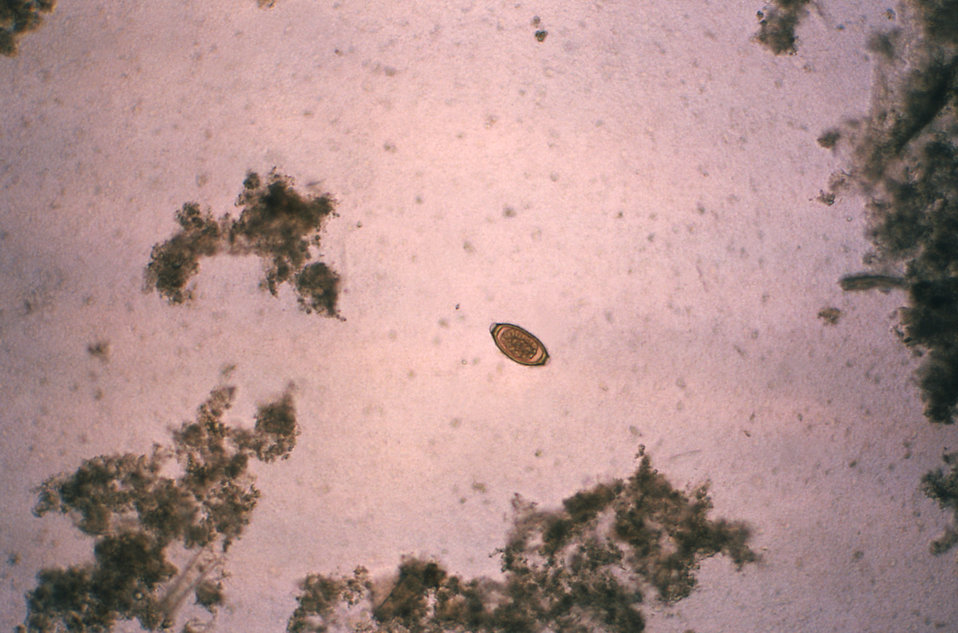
Under a magnification of 128x, this micrograph depicts an egg from the 'human whipworm', Trichuris trichiura, the causal agent of 'Trichuriasis'.